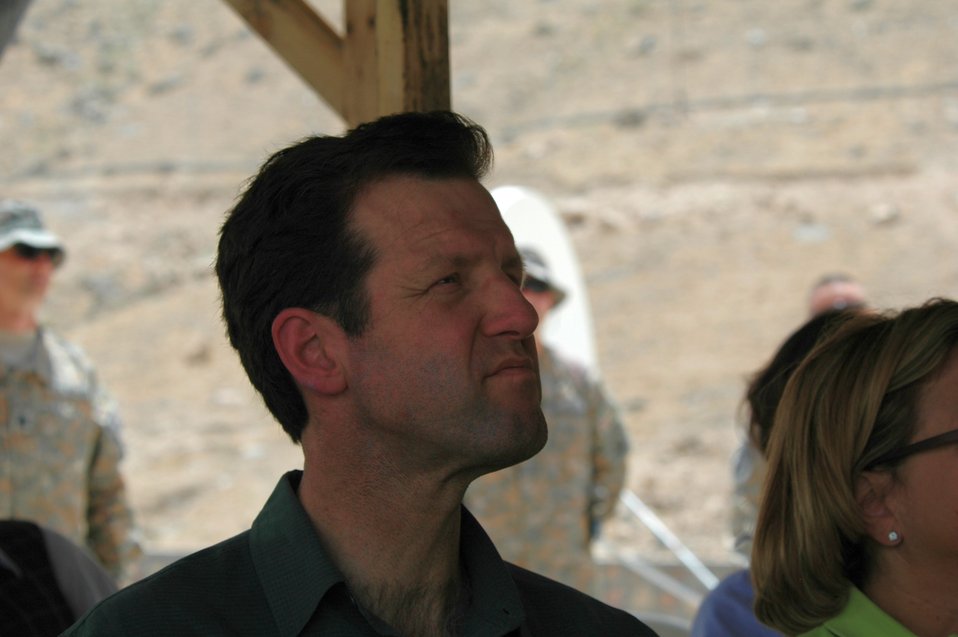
CODEL Berman